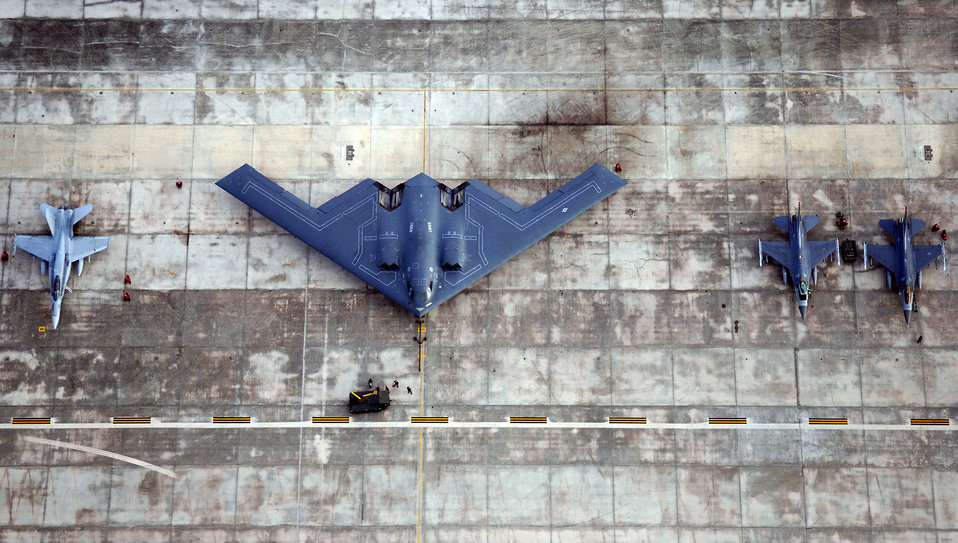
Joint training at Valiant Shield

A B-2 Spirit, two F-16 Fighting Falcons and an F-18 Hornet sit on the flightline at Andersen Air Force Base, Guam, for Exercise Valiant Shield on Thursday, June 22. The exercise, which concludes June 23, focuses on integrated joint training in a variety of mission scenarios.